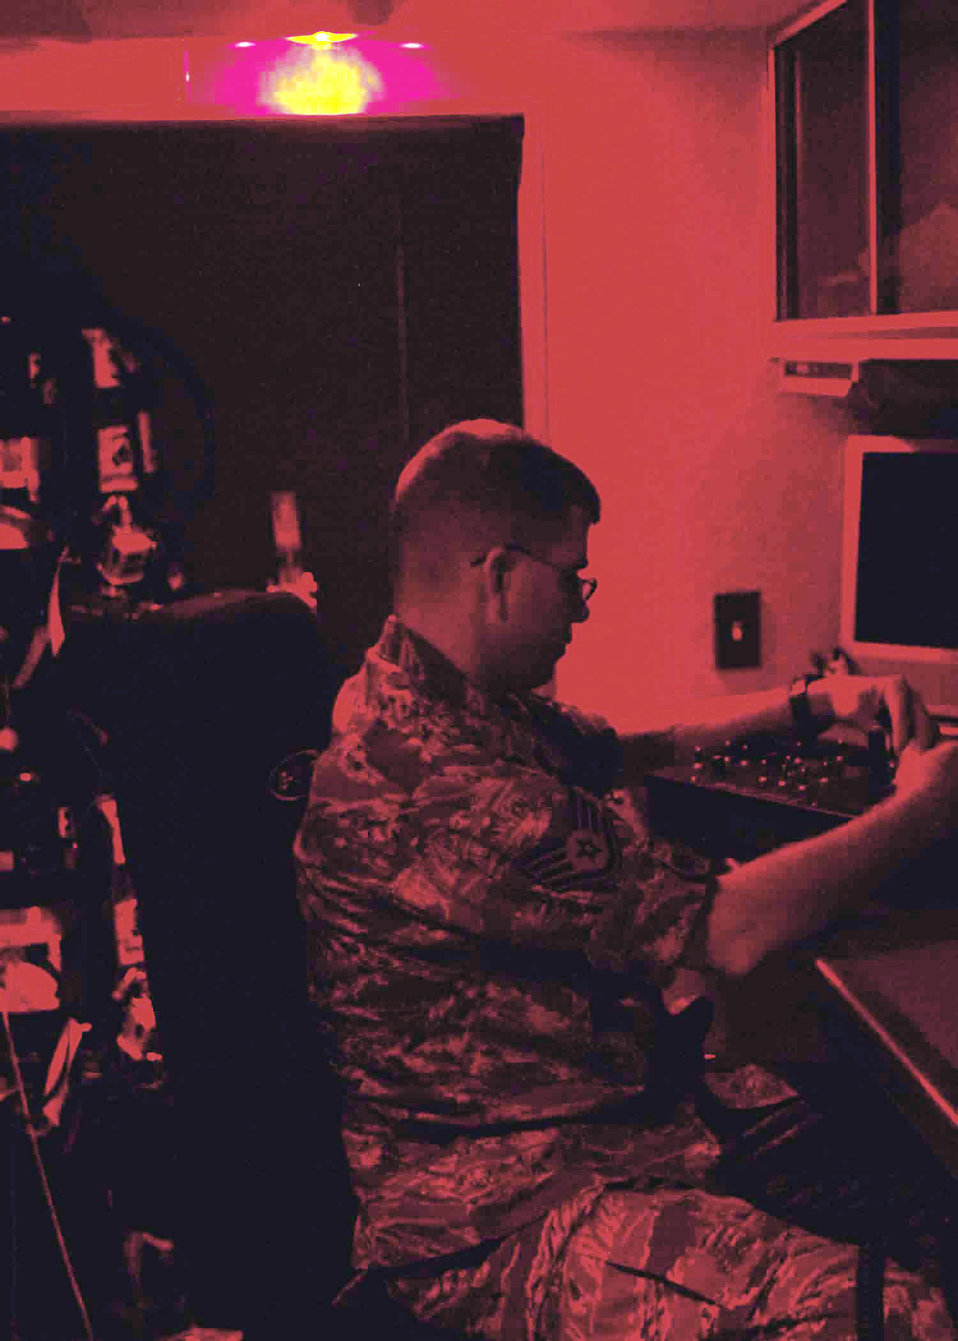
EOD Airmen help keep community safe

Staff Sgt. David Olson operates an HD-1 remote entry robot from within a bomb squad emergency response vehicle July 29 at Cannon Air Force Base, N.M. Sergeant Olson is a 27th Special Operations Civil Engineer Squadron explosive ordnance disposal member.